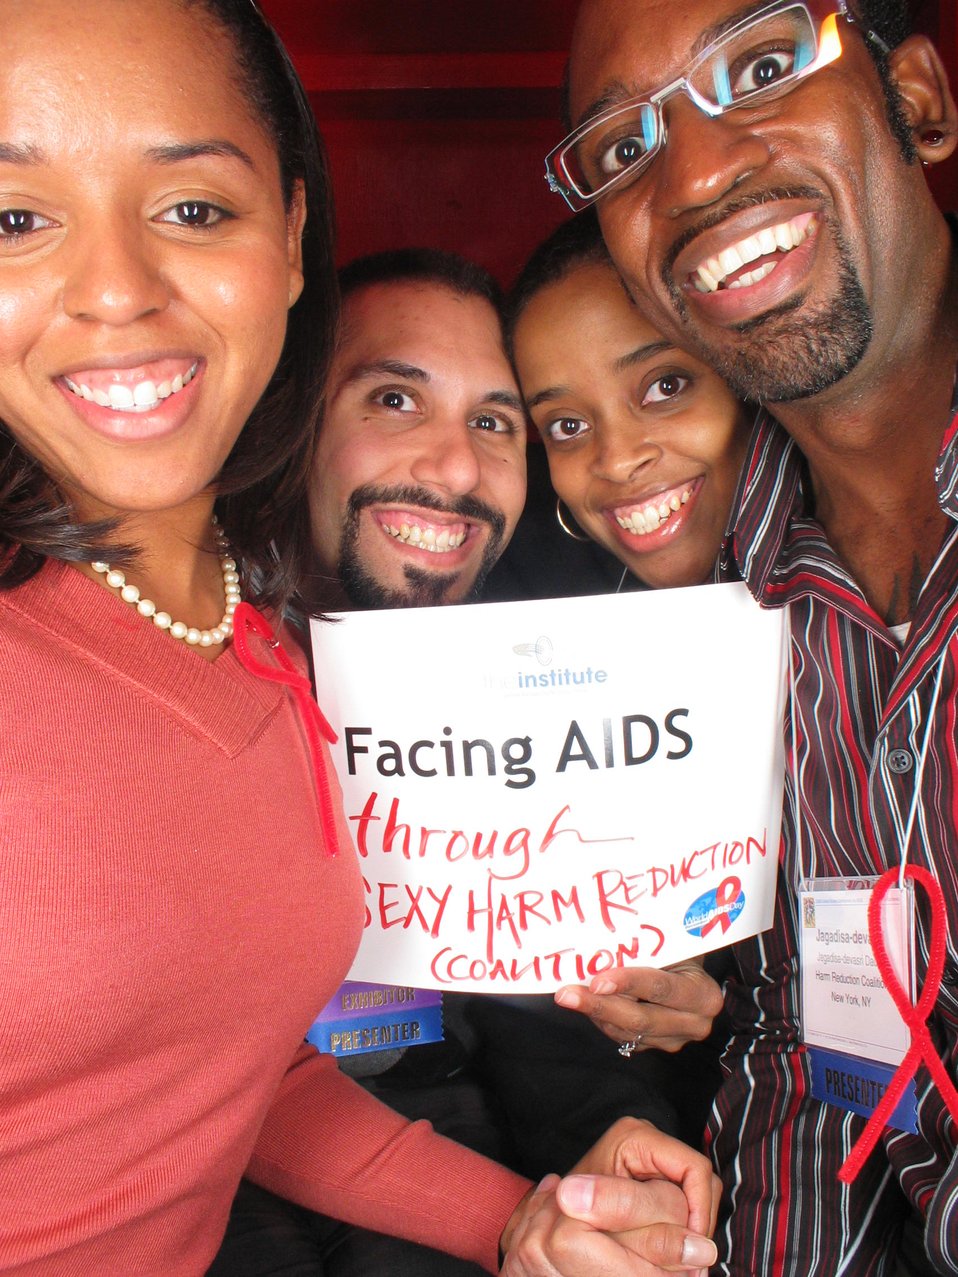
Facing AIDS through sexy harm reduction.